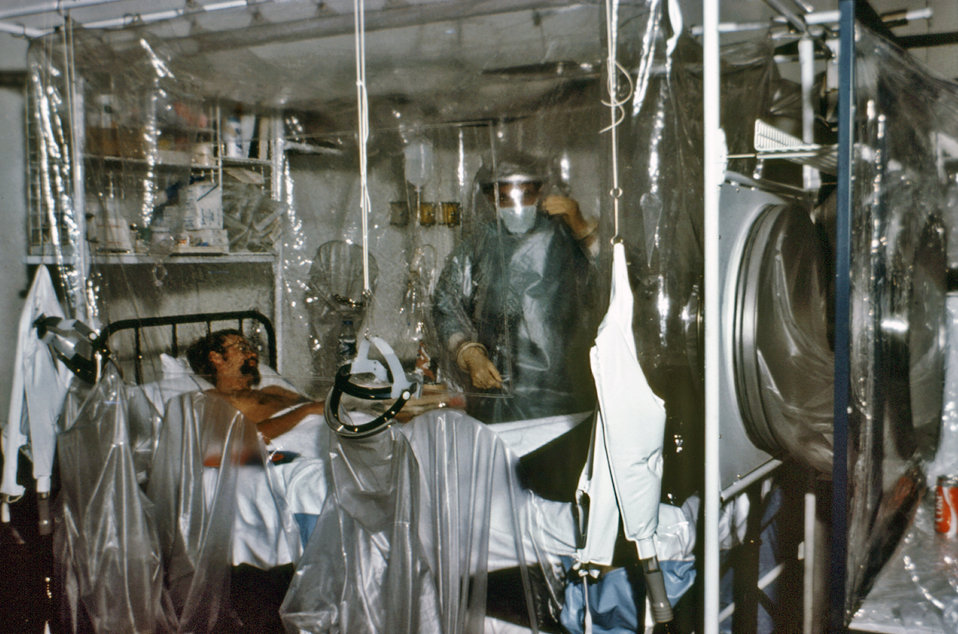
This 1976 photograph showed suspected Ebola patient Del Conn while he was lying down within an isolation unit in the Johannesburg Fever Hospital.